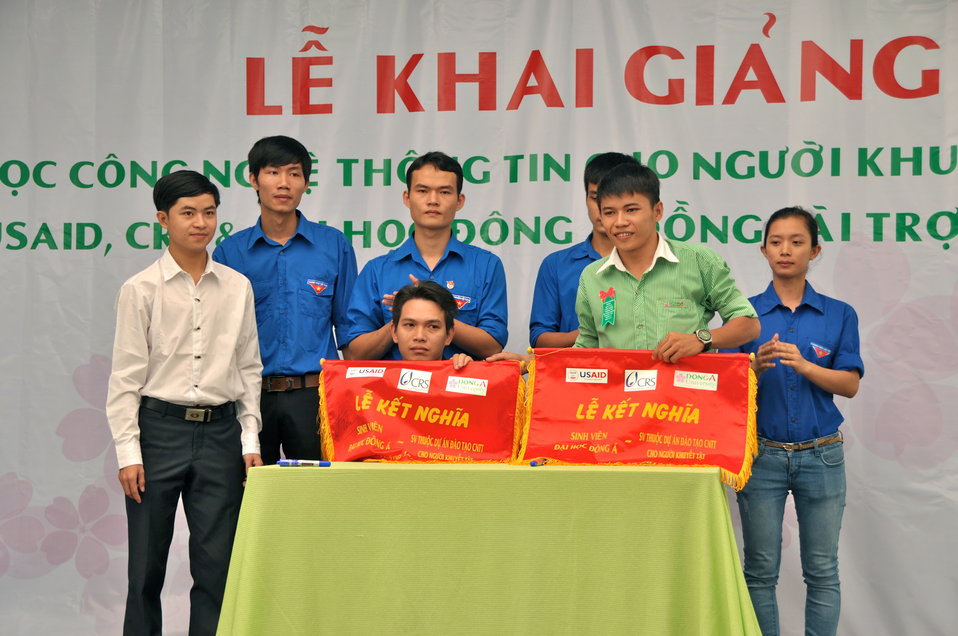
New class of students starts at Dong A Univeristiy with support from USAID and CRS

Photo: @USAIDVietnam
December 3, 2012